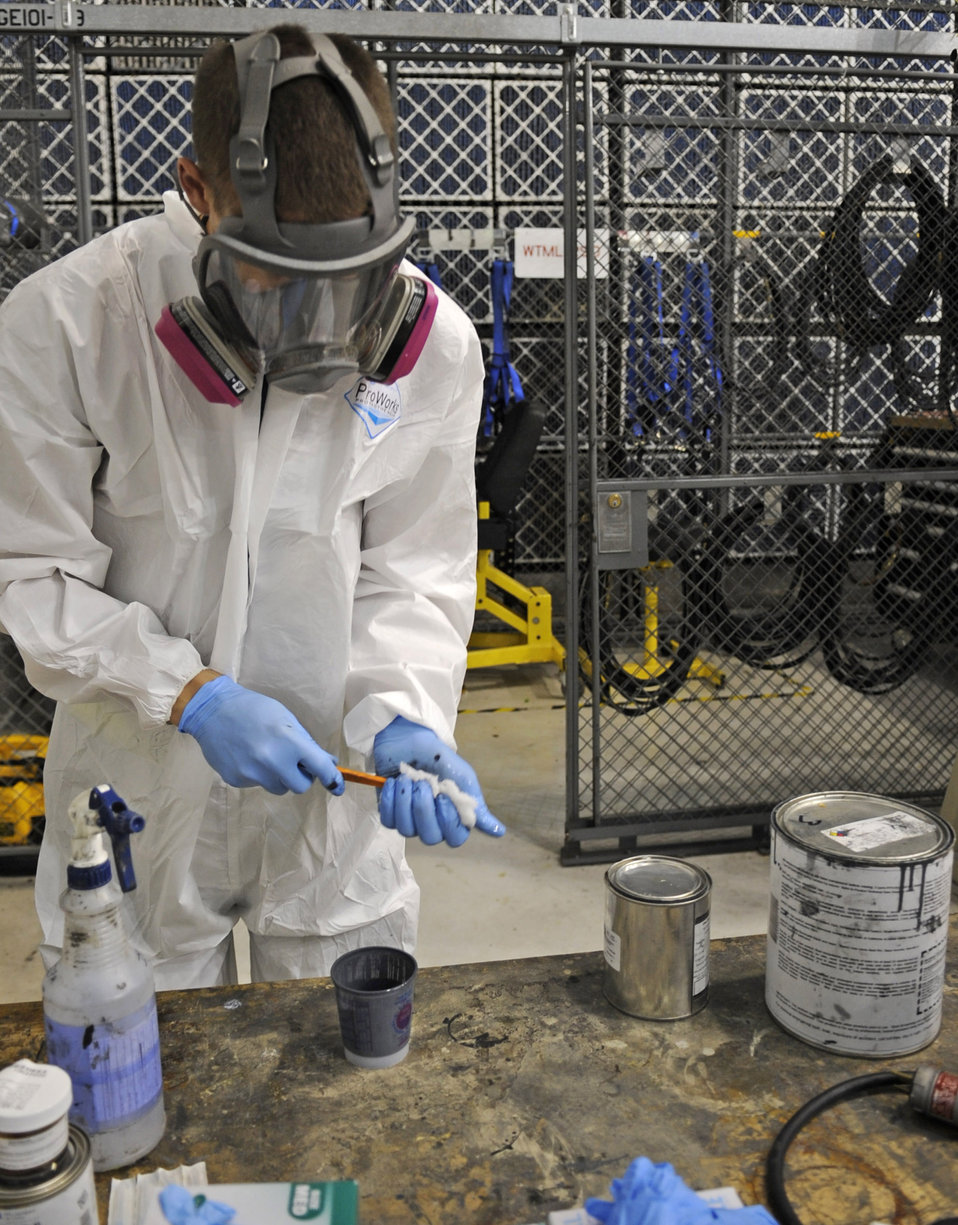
A fresh coat of paint

Senior Airman Kyle Miller mixes chemicals to produce a low-observable top coating for a B-2 Spirit July 8, 2011, at Whiteman Air Force Base, Mo. Airman Miller is a structural maintenance technician assigned to the 509th Maintenance Squadron.